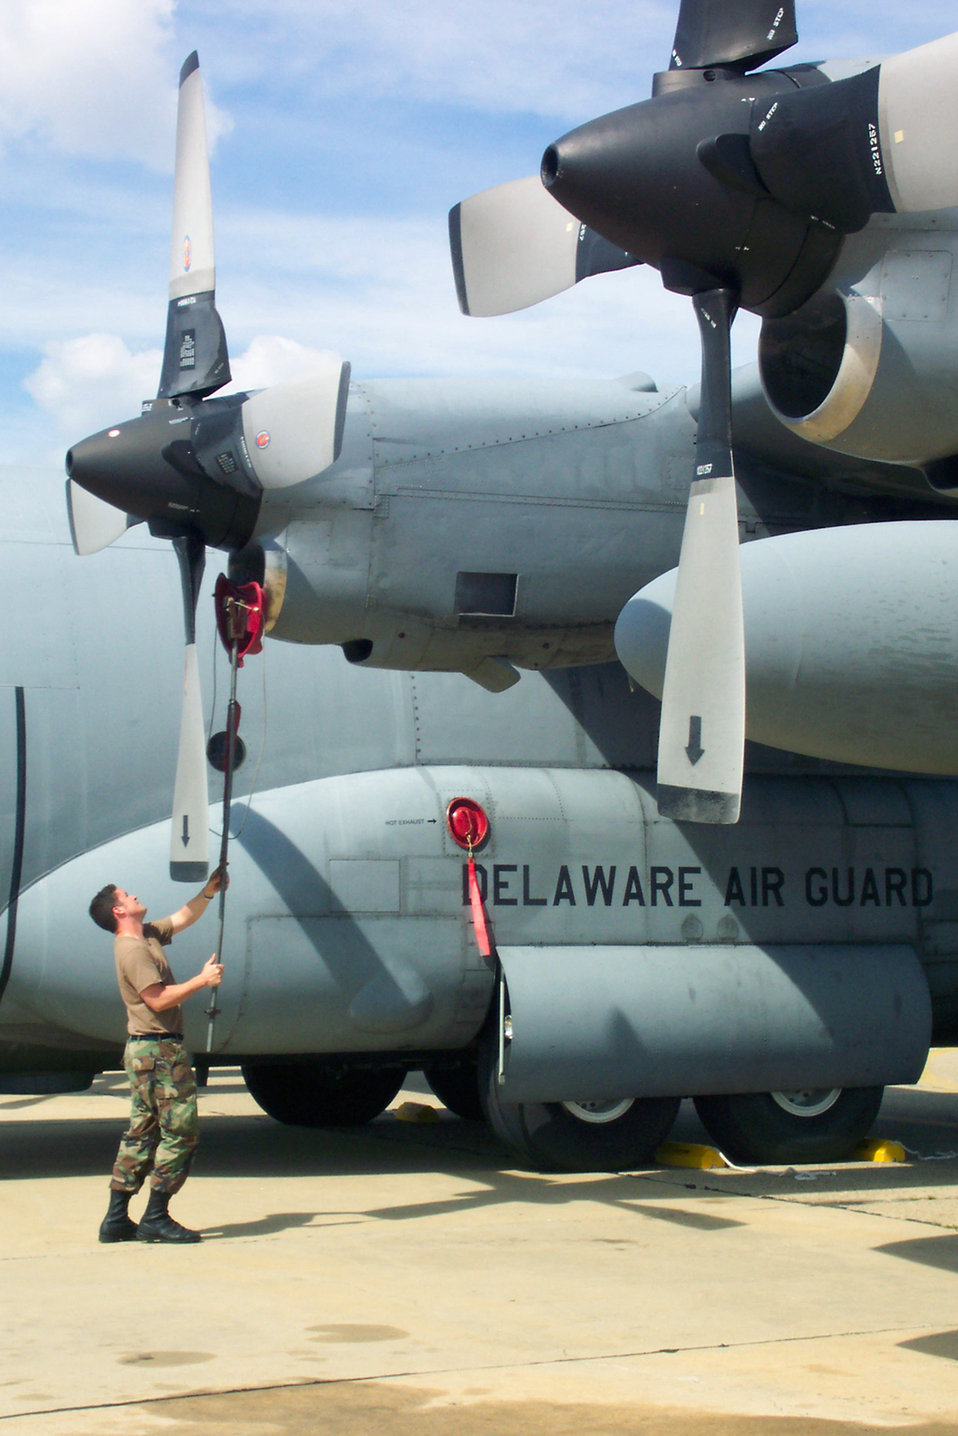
Getting things into their prop-er place

NEW CASTLE, Del. -- Staff Sgt. Caleb Mosher installs an engine intake cover on a Delaware Air National Guard C-130 Hercules that returned Sept. 3 from a mission supporting Operation Enduring Freedom. Sergeant Mosher is a C-130 turboprop mechanic and crew chief in the Delaware ANG here.